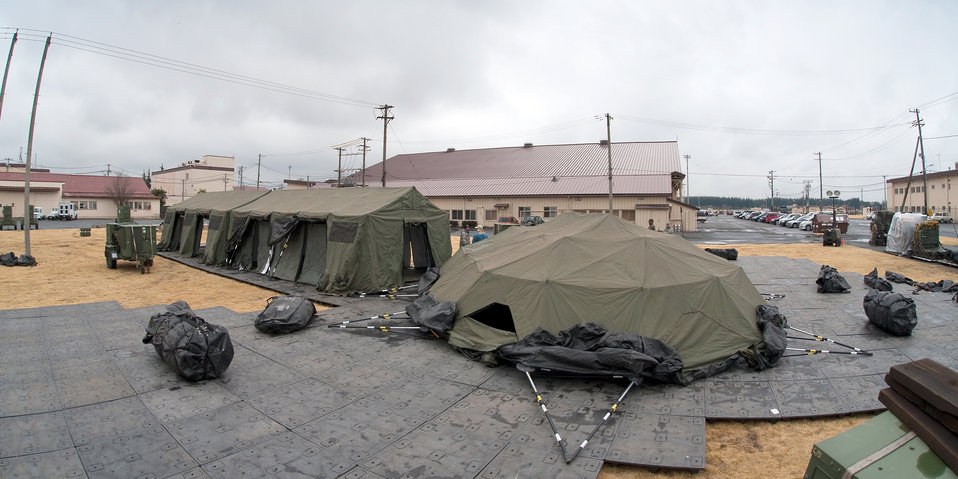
Yokota AB temporarily grows to accommodate Operation Tomodachi support

Pacific Command personnel build tents March 22, 2011, at Yokota Air Base, Japan. The tents will provide additional workspace for personnel deploying to Yokota AB in support of Operation Tomodachi.